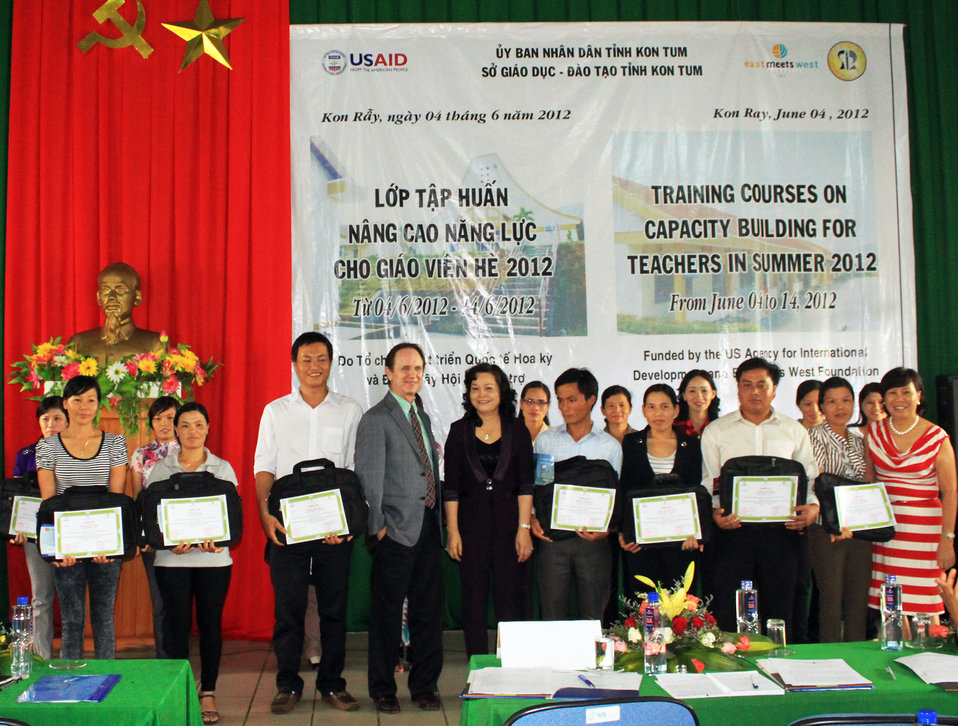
Teachers in Kon Tum receives certificates in recognition of their improved skills in art, linguistics, mathematics, nutrition and developing teaching materials